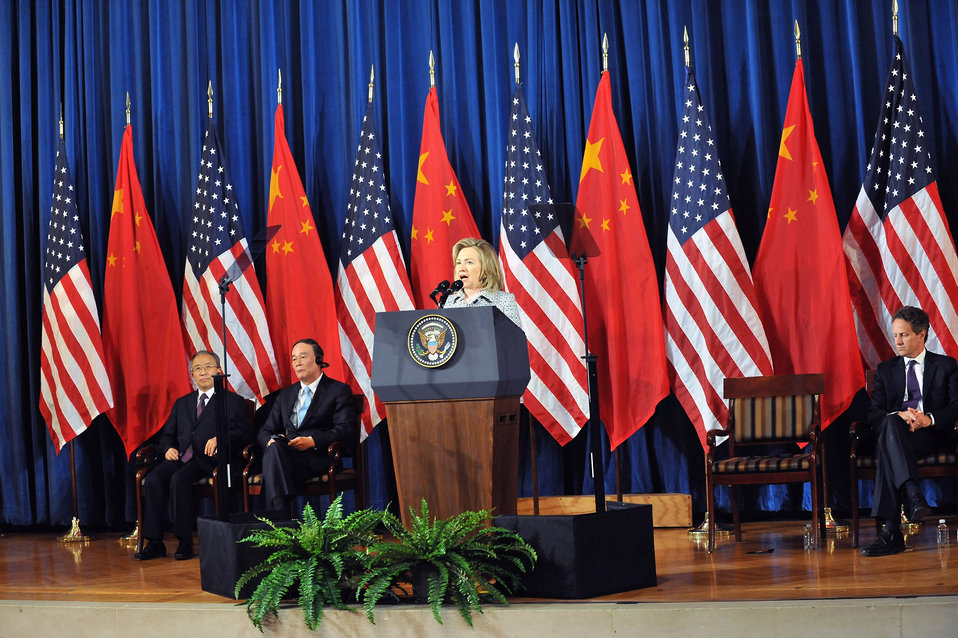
Secretary Clinton Delivers Remarks at Opening Session of U.S.-China SandED

U.S. Secretary of State Hillary Rodham Clinton delivers remarks at the Opening Session of the U.S.-China Strategic and Economic Dialogue (S&ED) at the U.S. Department of Interior in Washington, D.C., on May 9, 2011.